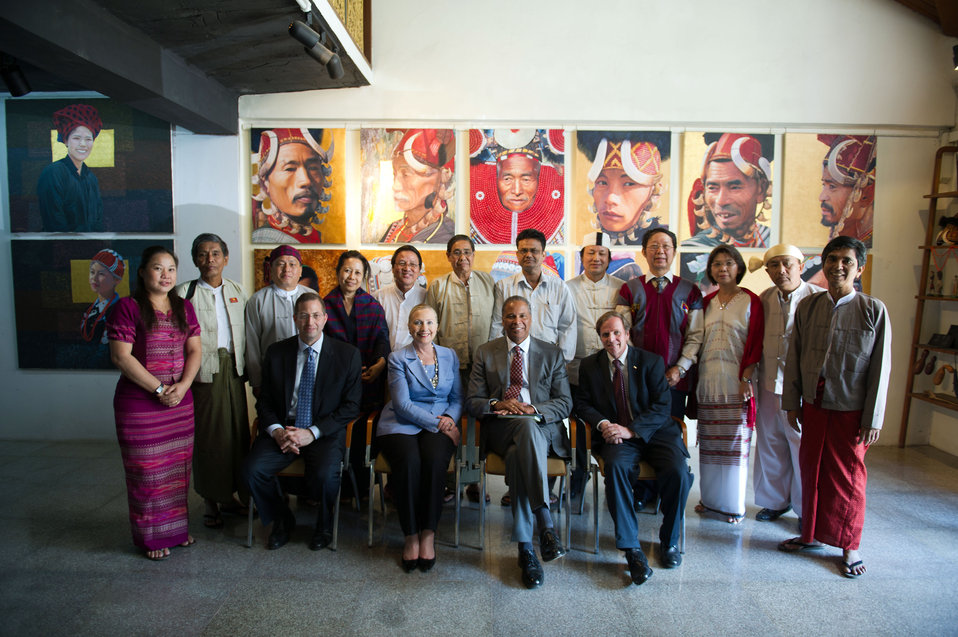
Secretary Clinton Meets With Burmese Ethnic Minority Representatives

U.S. Secretary of State Hillary Rodham Clinton meets with representatives of ethnic minority groups in Rangoon, Burma, on December 2, 2011. Also featured in the photo are Embassy Rangoon Charge d'Affaires Michael Thurston, right of center in the front row; and Assistant Secretary of State for Democracy and Human Rights Michael Posner, front row far right.